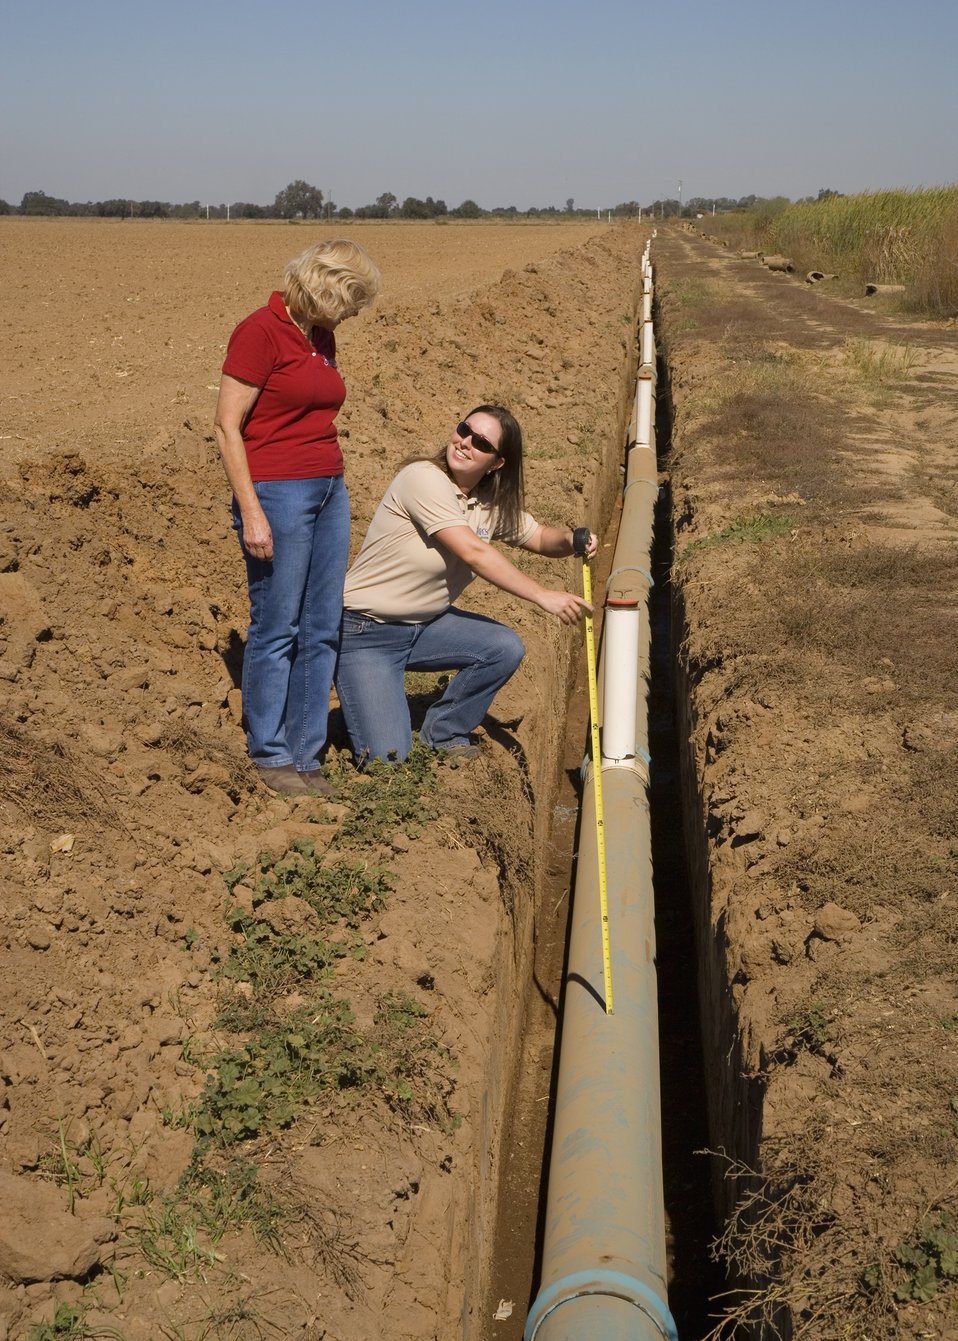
Dairy farmer and an NRCS conservationist performing a construction inspection on newly installed irrigation pipeline.